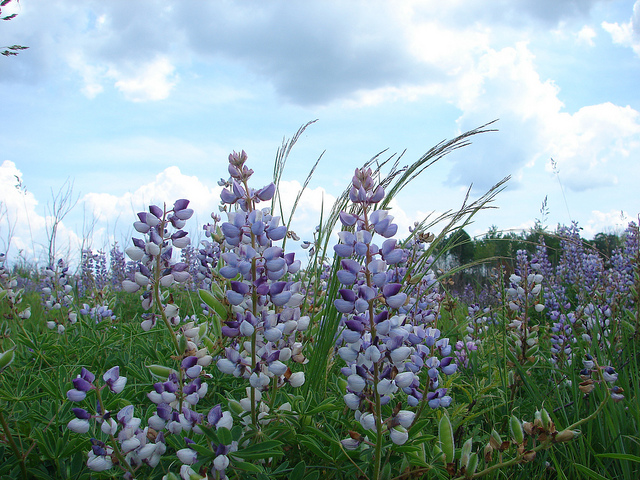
lupines

Necedah National Wildlife Refuge